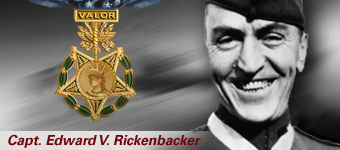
Capt. Eddie Rickenbacker, America's ace of aces for World War I, and Medal of Honor recipient.